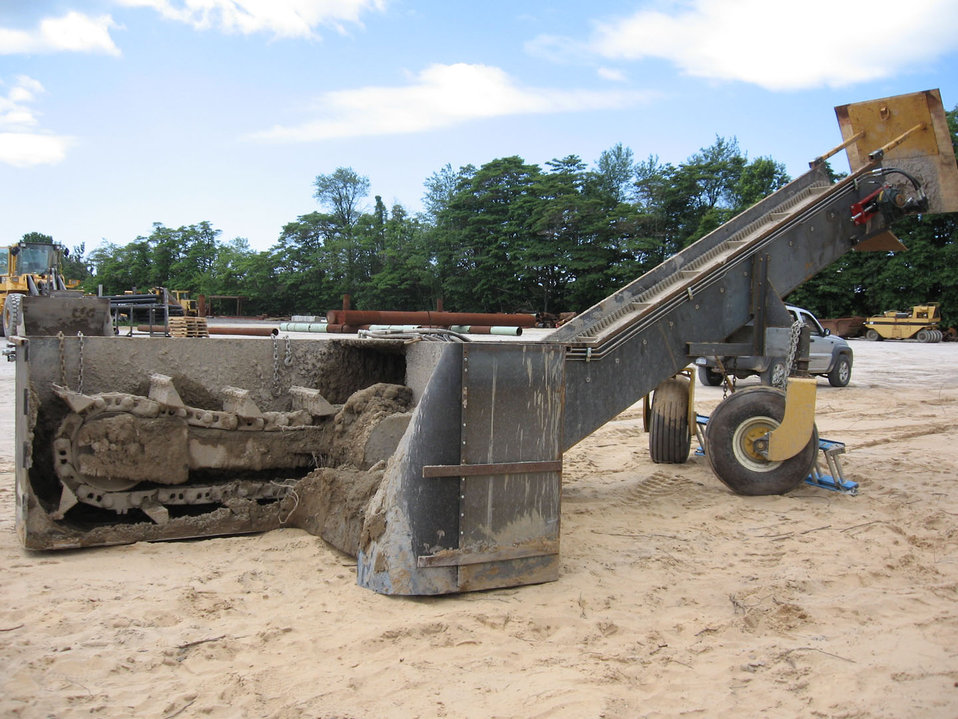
Recovery Act Funds Construction of Trench to Mitigate Groundwater Contamination